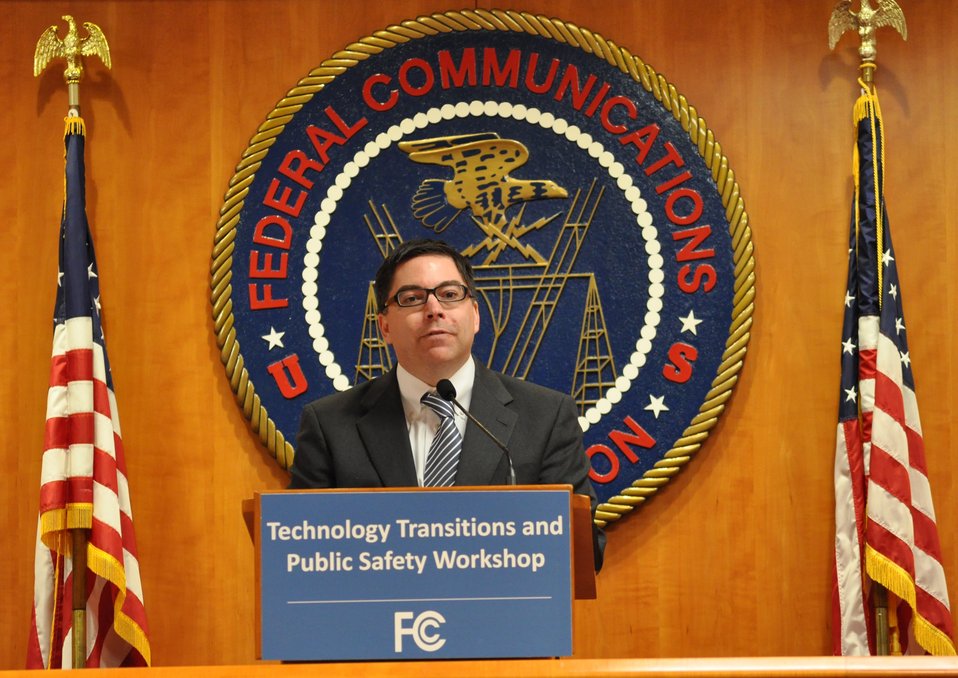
4.17.2014 Technology Transitions and Public Safety Workshop,

Commissioner O'Rielly at the Technology Transitions and Public Safety Workshop, April 17, 2014.